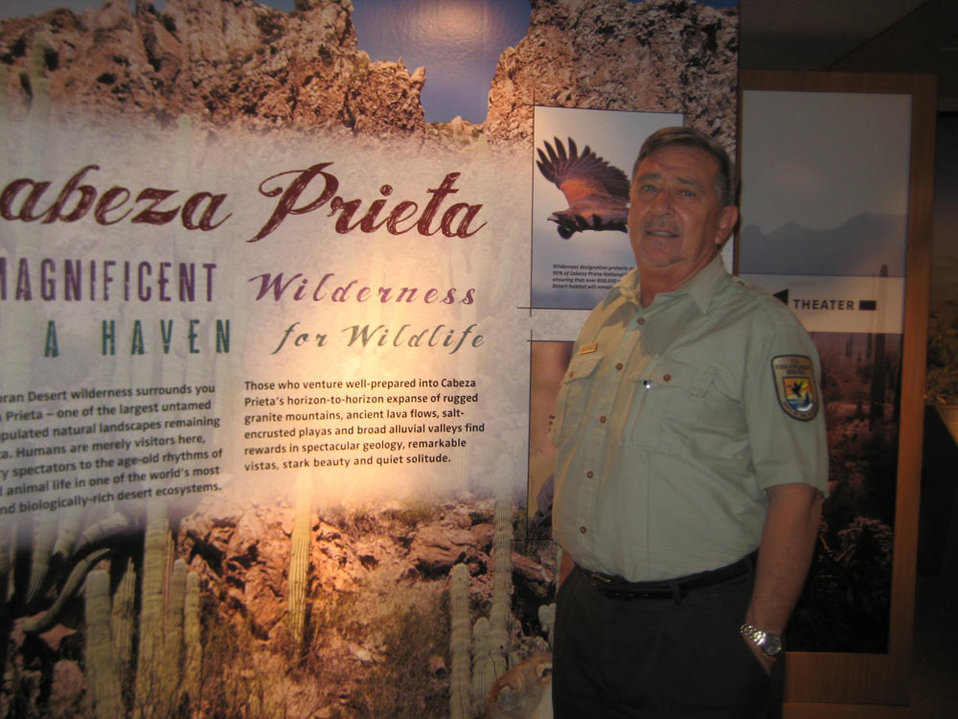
Sid Slone-Southwest Region

Army veteran Sid Slone is the Refuge Manager at Cabeza Prieta National Wildlife Refuge in Arizona.